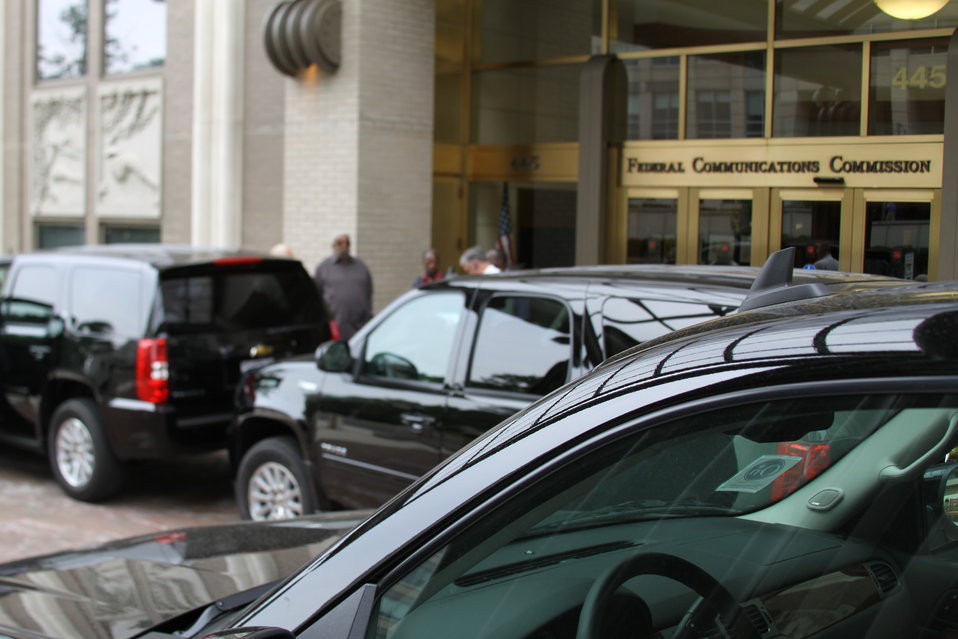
Tahoes 024